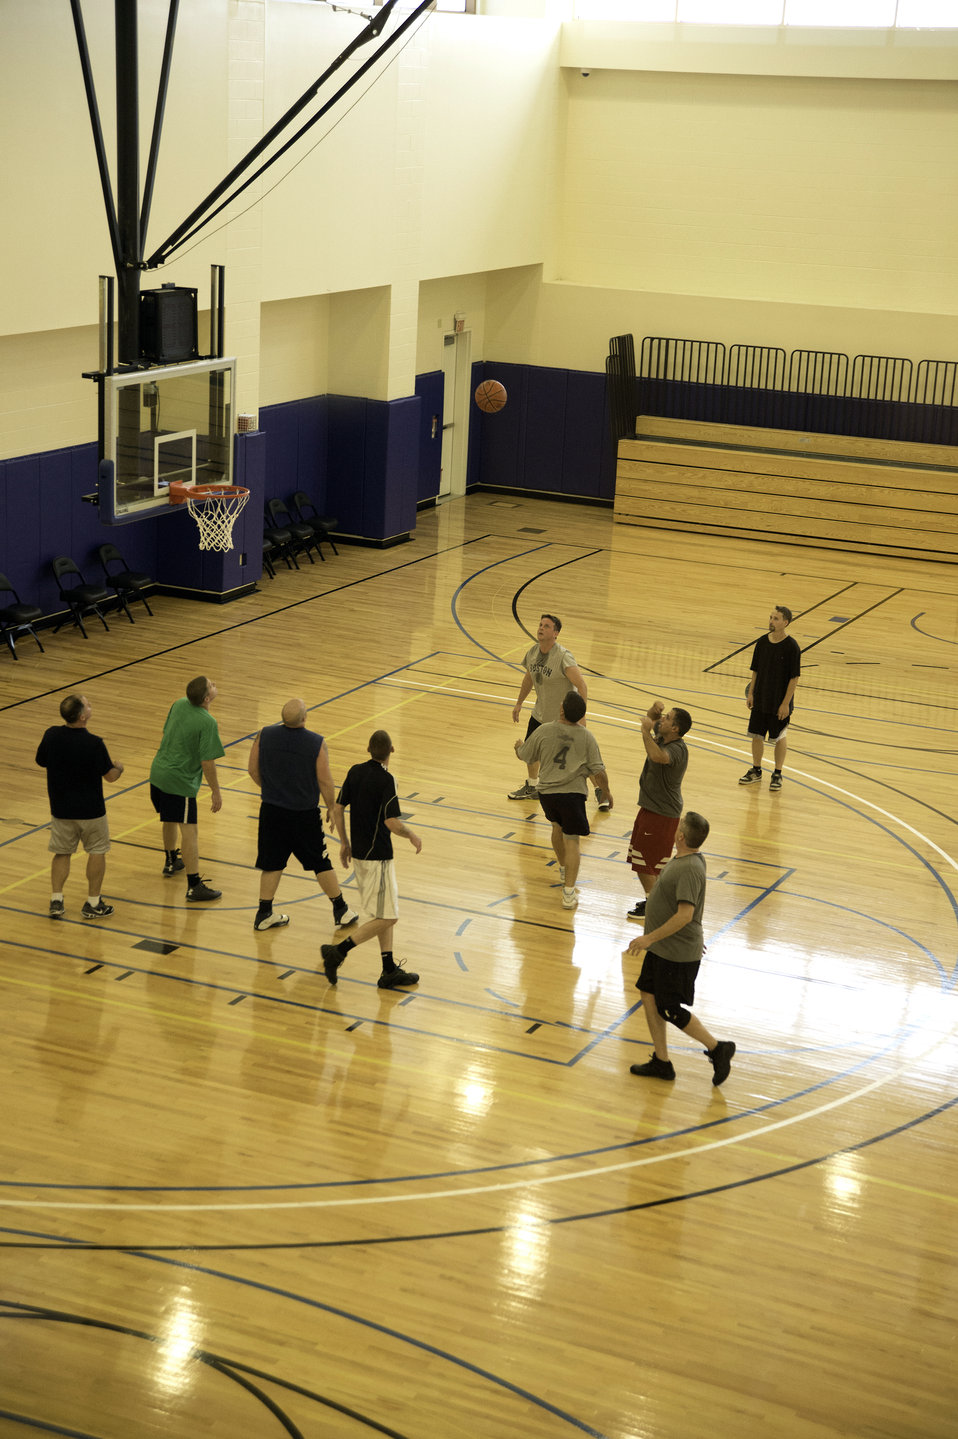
As part of the Mohegan Tribe’s Health and Wellness initiative, members of the Mohegan Tribe and employees of the Mohegan Tribal Government use the basketball court at the Mohegan Tribe Community Center and Government Building in Uncasville, CT on Nov. 18, 2013. A U.S. Department of Agriculture (USDA) Rural Development (RD) Community Facility Loan was provided to the Mohegan Tribe for the construction of the Mohegan Tribe Community Center and Government Building in Uncasville, CT. USDA’s RD Community Facilities Programs makes and guarantees loans to develop essential community facilities in rural areas and towns of up to 20,000 in population. Loans and guarantees are available to public entities such as municipalities, counties, parishes, boroughs, and special-purpose districts, as well as to non-profit corporations and tribal governments. The 160,000 square foot building Center hosts an exhibit celebrating federal recognition, history of Mohegan Chiefs, a new Library and Archives space, new Arts and Crafts room, a new gymnasium, and a new community room to enjoy food and family. The Center will continue the Tribe’s plan for growth and meeting the needs of its members.